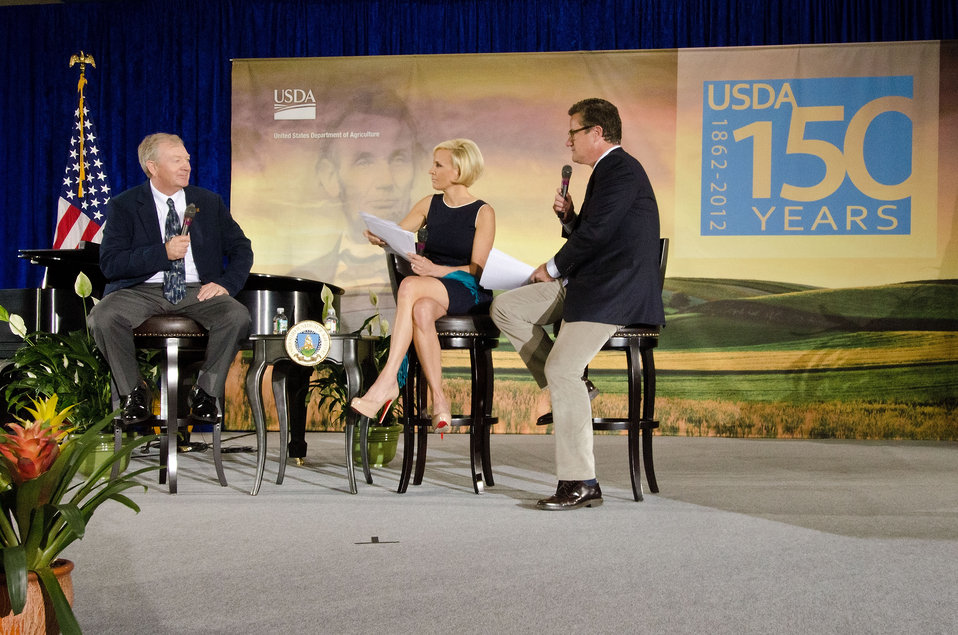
From left: Stephen Gage, U.S Forest Service, 9/11 Incident Commander, Pentagon National Incident Management Team, Mika Brzezinski and Former Congressman Joe Scarborough (R-Fla.) hosts of MSNBC’s “Morning Joe and Masters of Ceremony listen to Gage talk about the aid provided by the FS Incident Command System at the Pentagon on September 11, 2001. The show took place at the United States Department of Agriculture's 150th Anniversary celebration in Washington, D.C., on Tuesday, May 15, 2012.